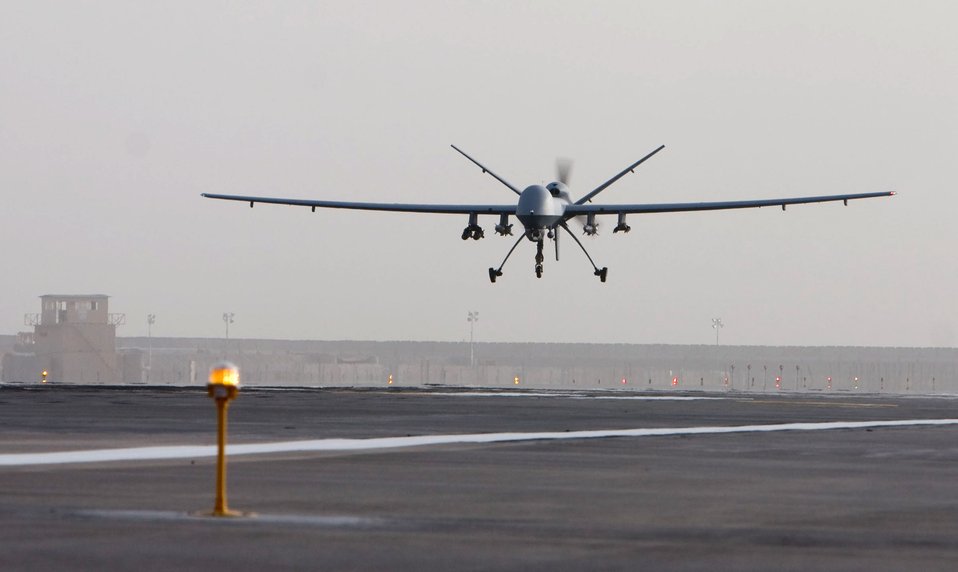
Air Force's hunter-killer UAV now flying in Afghanistan

An MQ-9 Reaper takes off on a mission in Afghanistan Oct. 1. The Reaper has completed 12 missions since its inaugural flight there Sept. 25.